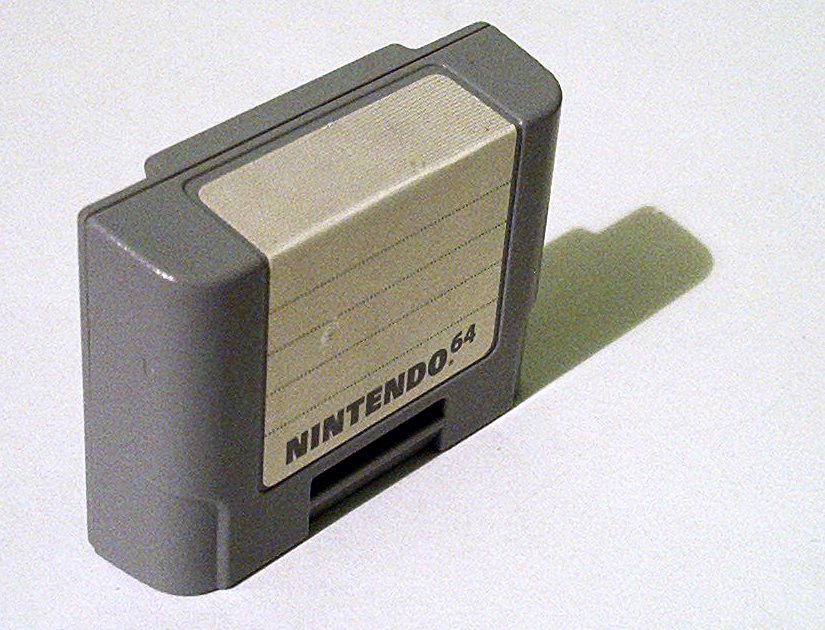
N64-mem card